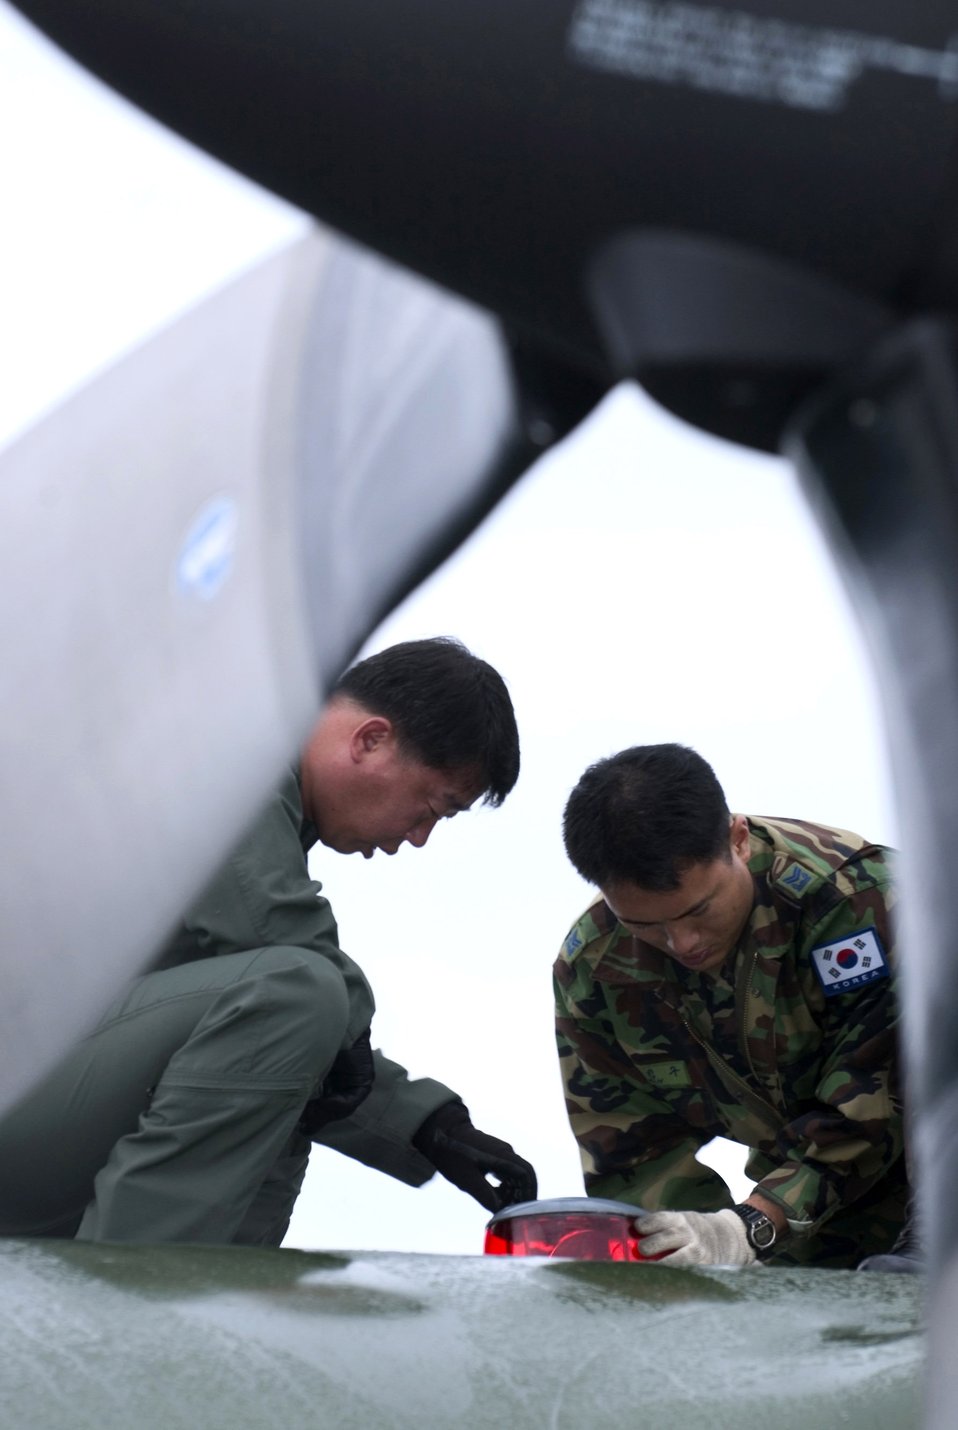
Transformation redefines multi-national exercise

Chief Master Sgt. Jongkyu Lee and Master Sgt. Jinkoo Kim repair an anti-collision lamp on a C-130 Hercules at Elmendorf Air Force Base, Alaska, on July 25. They are members of the Korean air force and are participating in Cooperative Cope Thunder, a Pacific Air Forces exercise that ends Aug. 5.